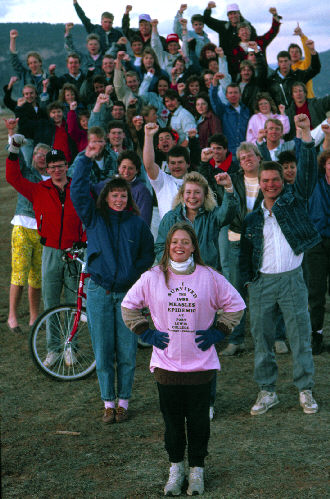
Measles Survivors